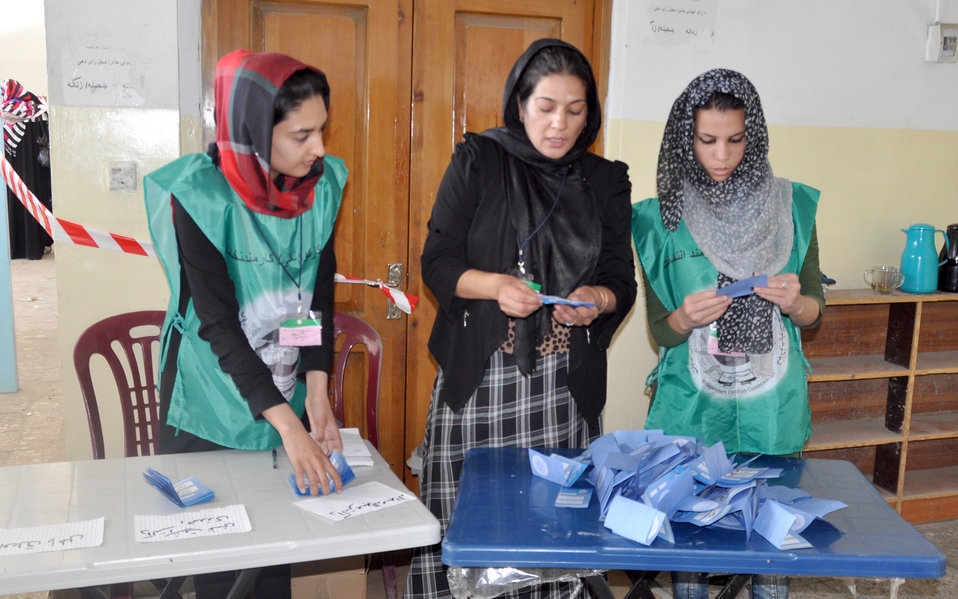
IEC workers count ballots in Kabul.